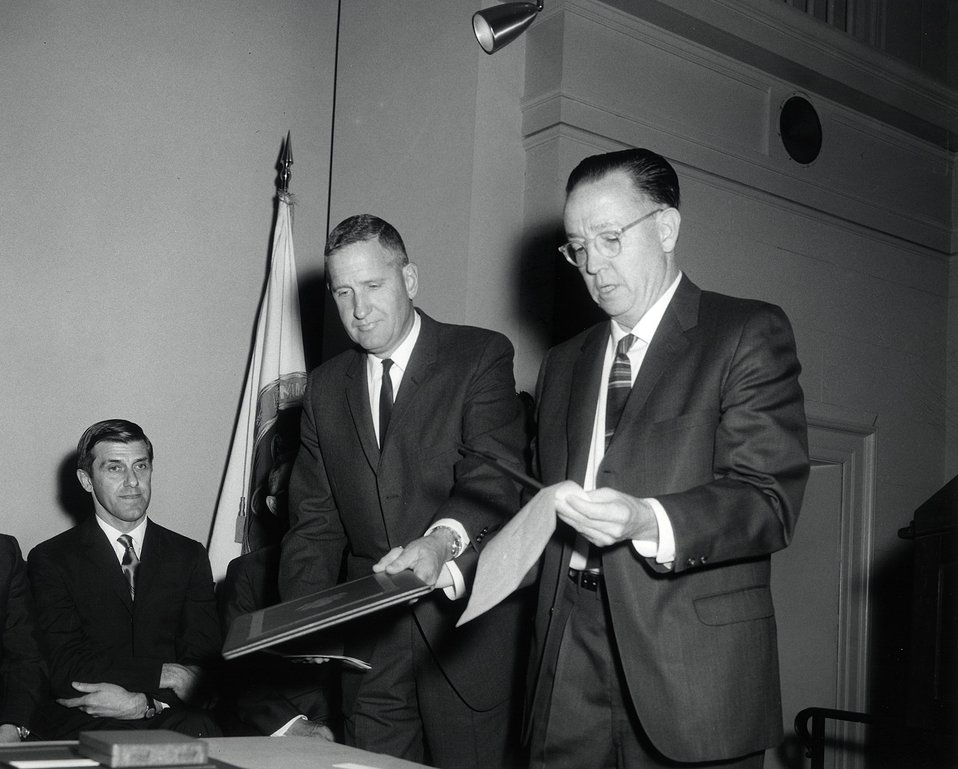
7th E.O. Lawrence Award Ceremony, April 27, 1966, Wash., D.C. L-R: Dr. Huizenga, Dr. Agnew, Commissioner Ramey.